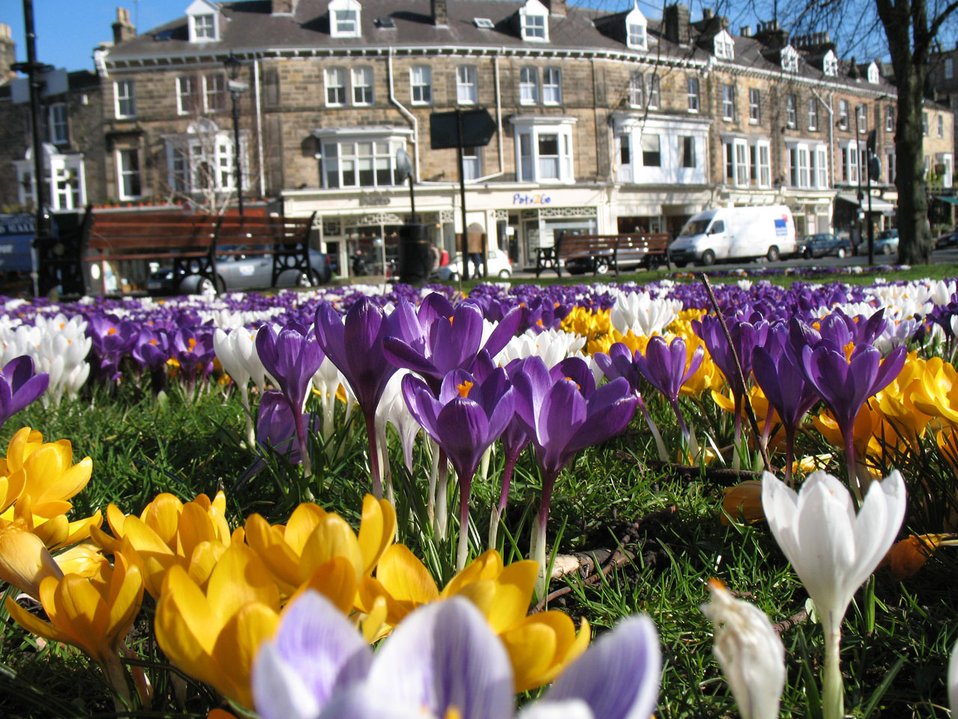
Crocuses in park

Close up picture of crocuses in park with some buildings in background.